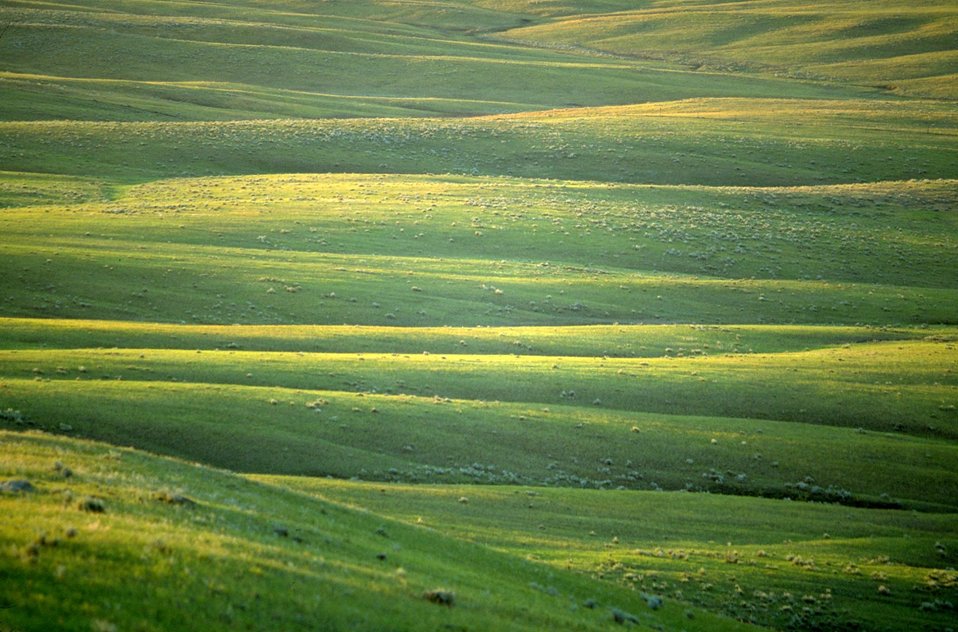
Grassland Vista 35 miles north of Belle Fourche